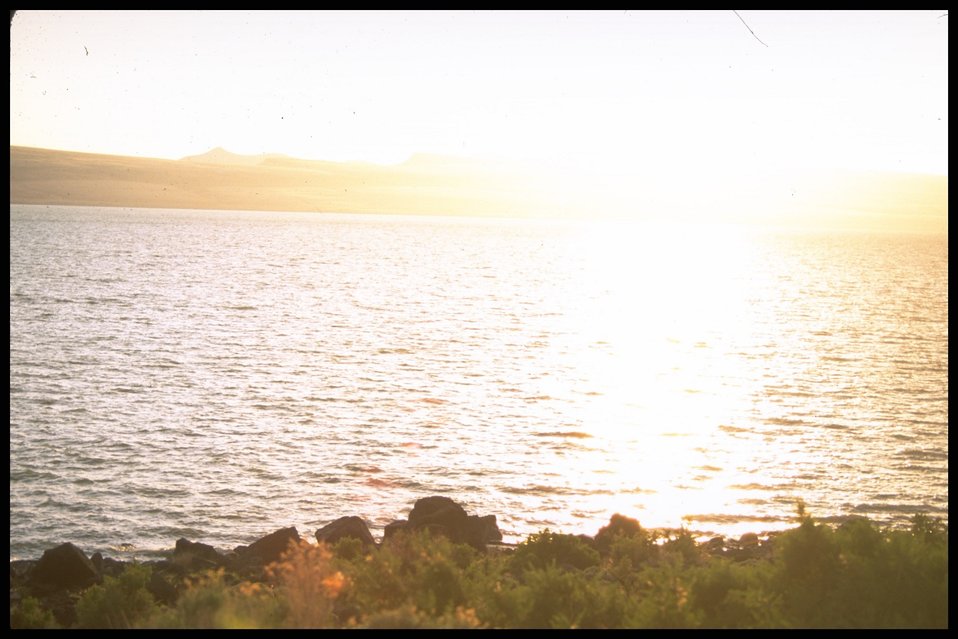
Lake Abert, Lakeview District.